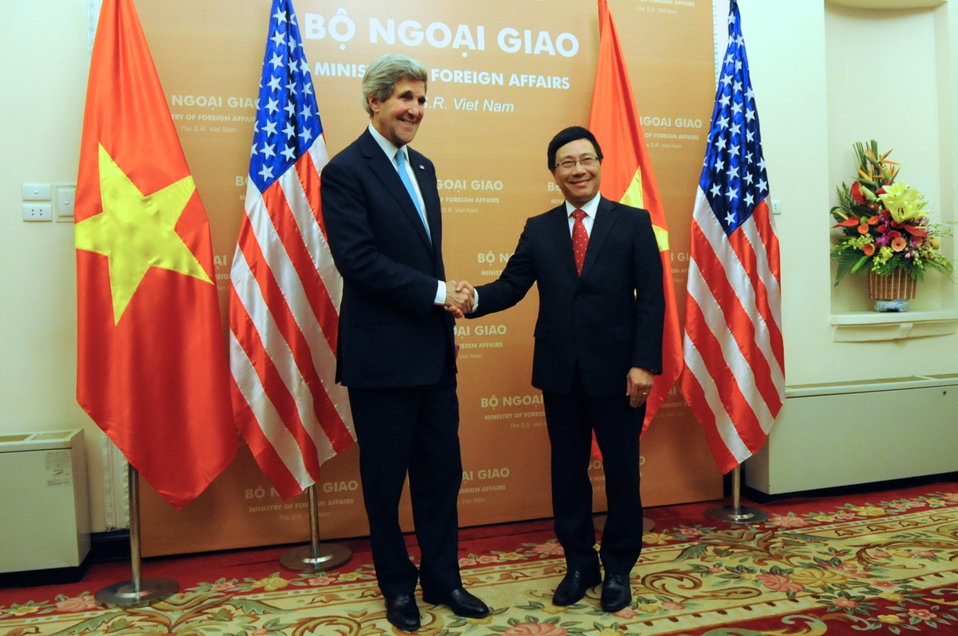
Secretary Kerry Meets With Vietnamese Foreign Minister Minh

U.S. Secretary of State John Kerry poses with Vietnamese Foreign Minister Pham Binh Minh before a bilateral meeting in Hanoi, Vietnam, on December 16, 2013.